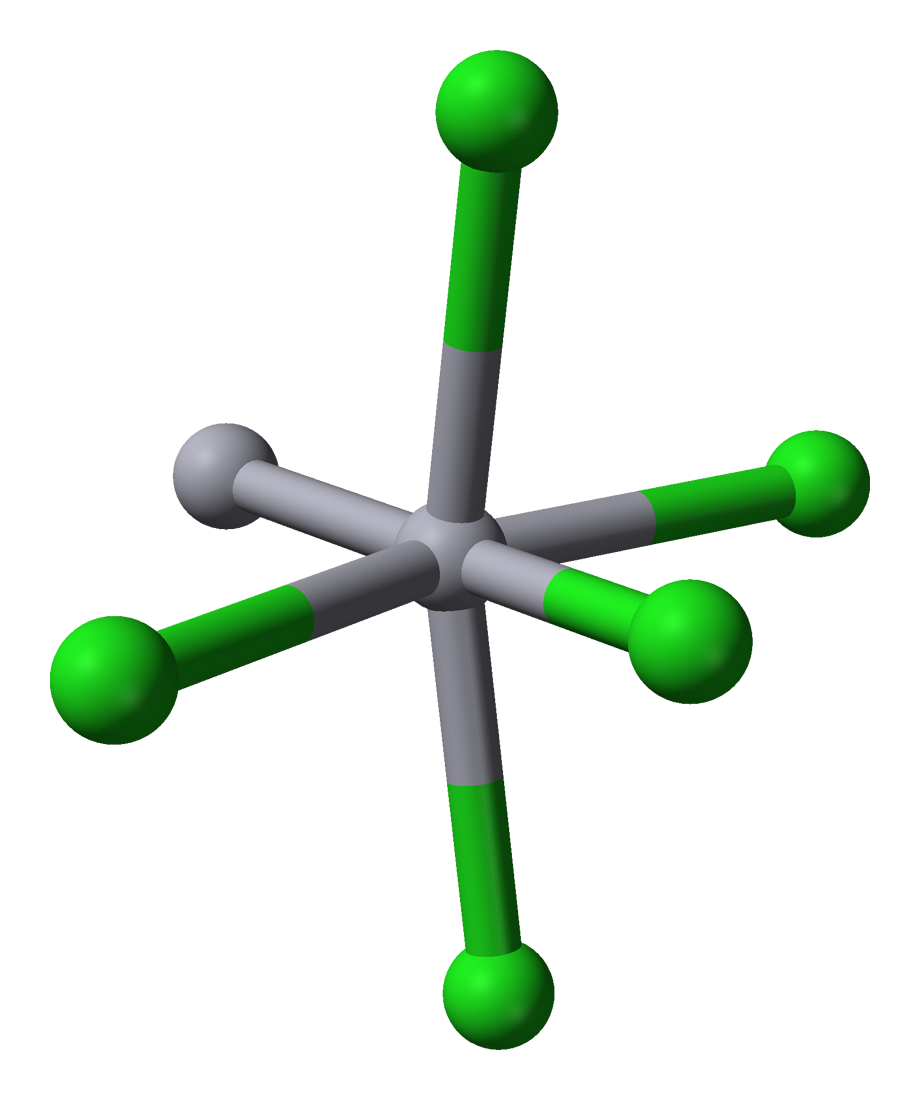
Ball-and-stick model of the coordination environment of mercury in the crystal structure of calomel, mercury(I) chloride, Hg2Cl2. Structural data from the CrystalMaker 8.1 structure library, originally from Calos N J, Kennard C H L, Davis R L (1989) Zeitschrift f√ºr Kristallographie 187:305-.